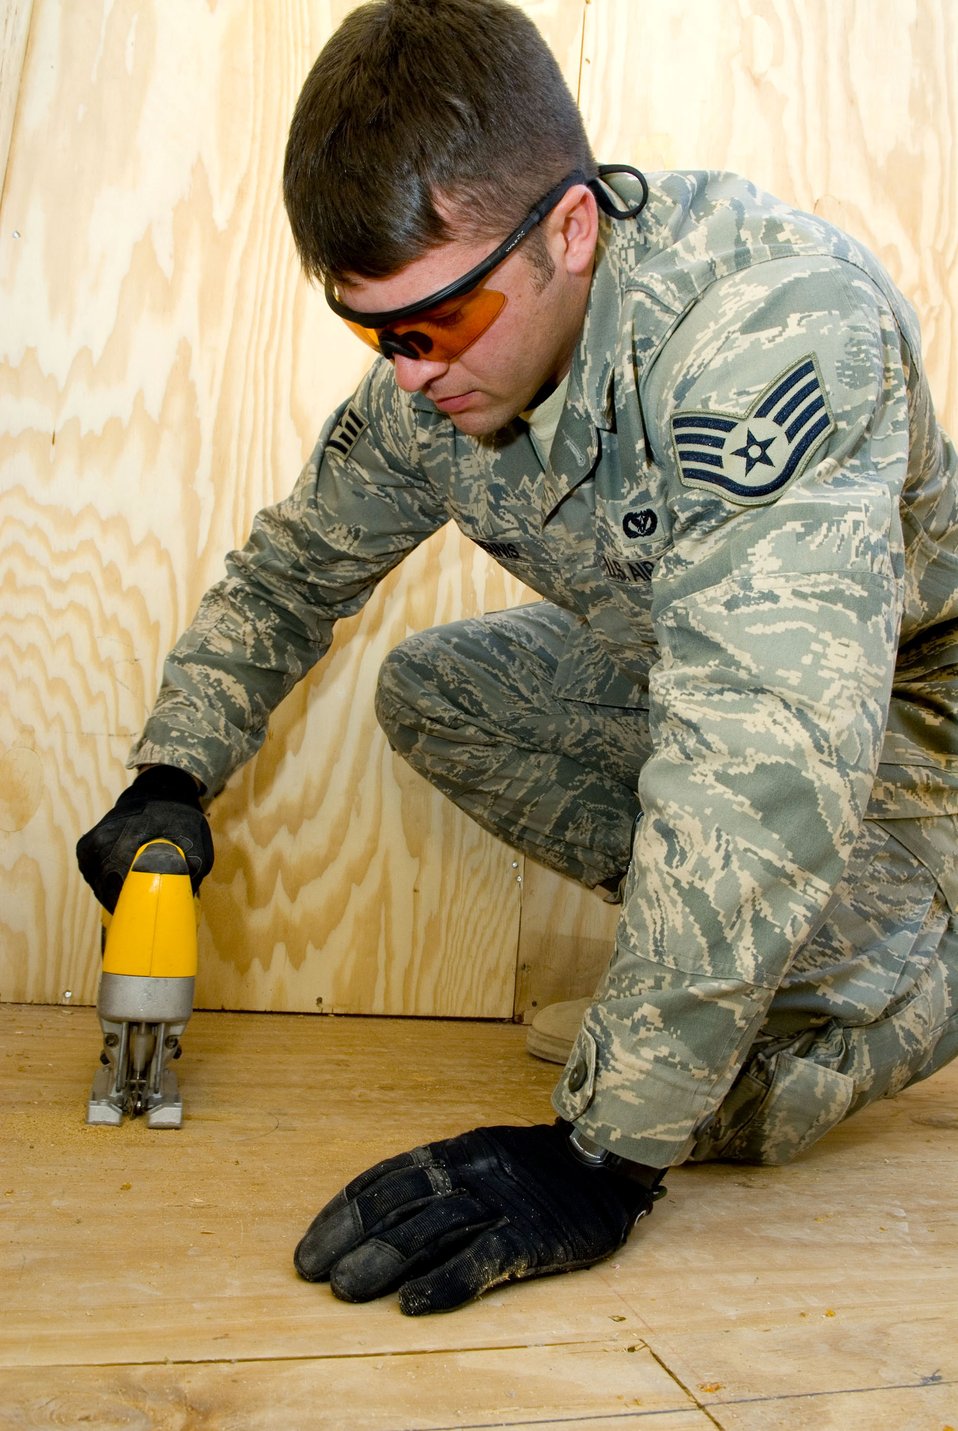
Fixing the 'hole' thing

Staff Sgt. Caleb Dennis cuts a hole into a shower latrine unit Jan. 15 at Balad Air Base, Iraq. The hole will be used to install drainage pipes in the unit. Sergeant Dennis, a 732nd Expeditionary Civil Engineer Squadron utility technician, is deployed from Kadena Air Base, Japan.